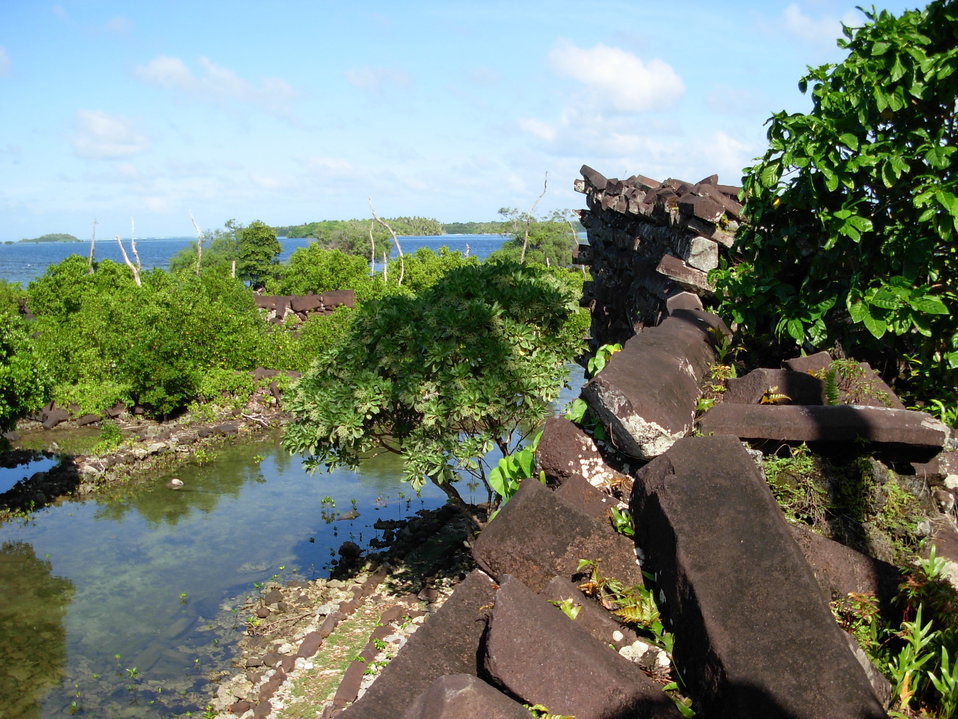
The volcanic 'log' city of Nan Madol.